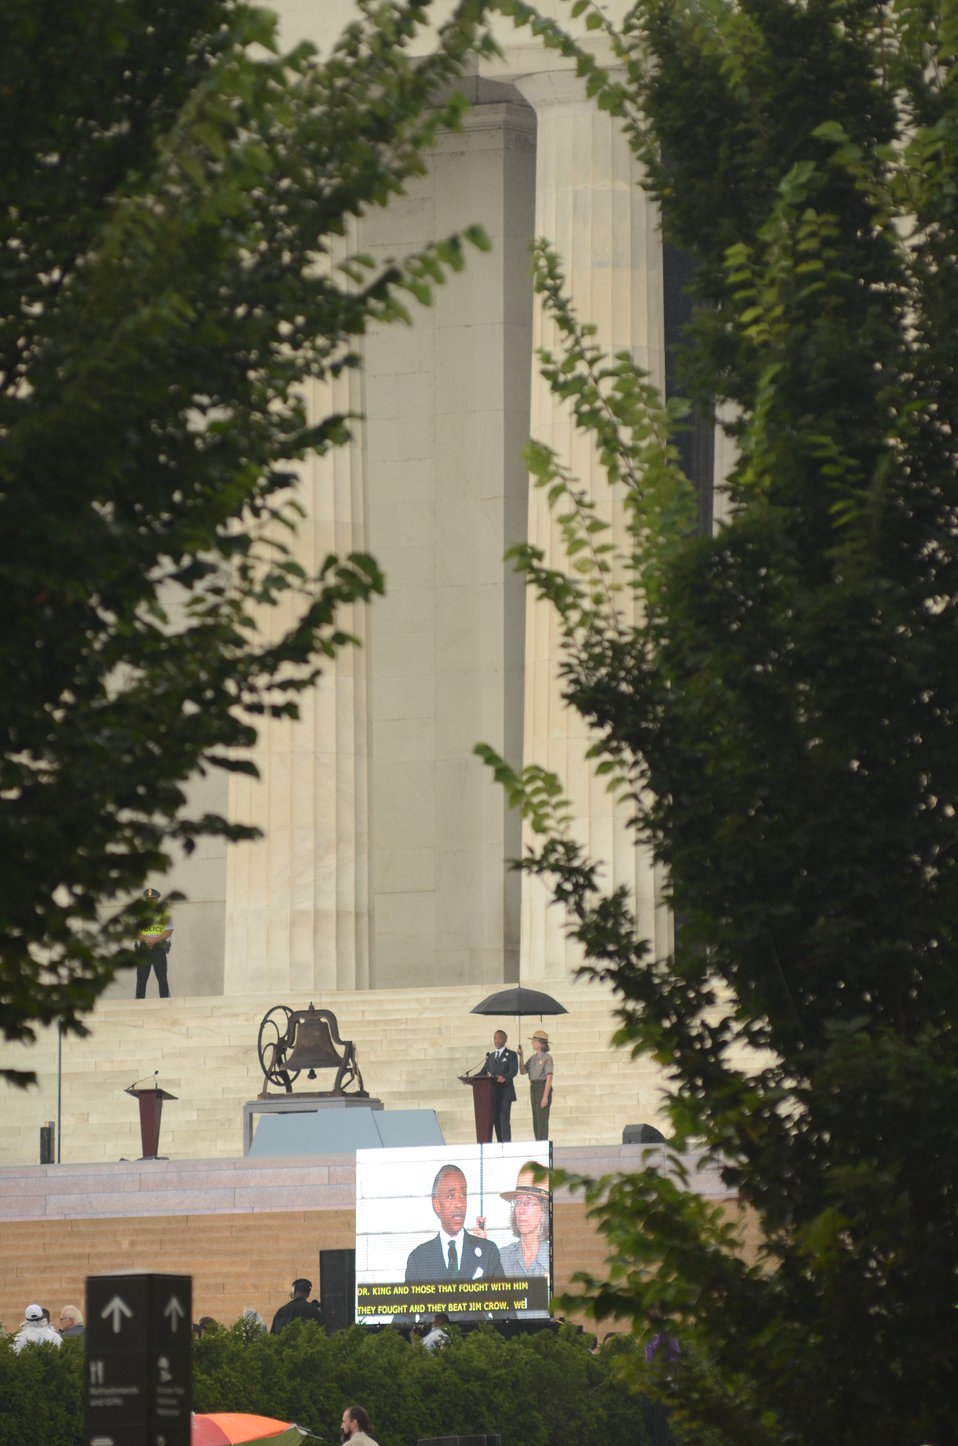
The Reverend Al Sharpton speaking at the Lincoln Memorial for the March on Washington, D.C., on Wed., Aug. 28, 2013.